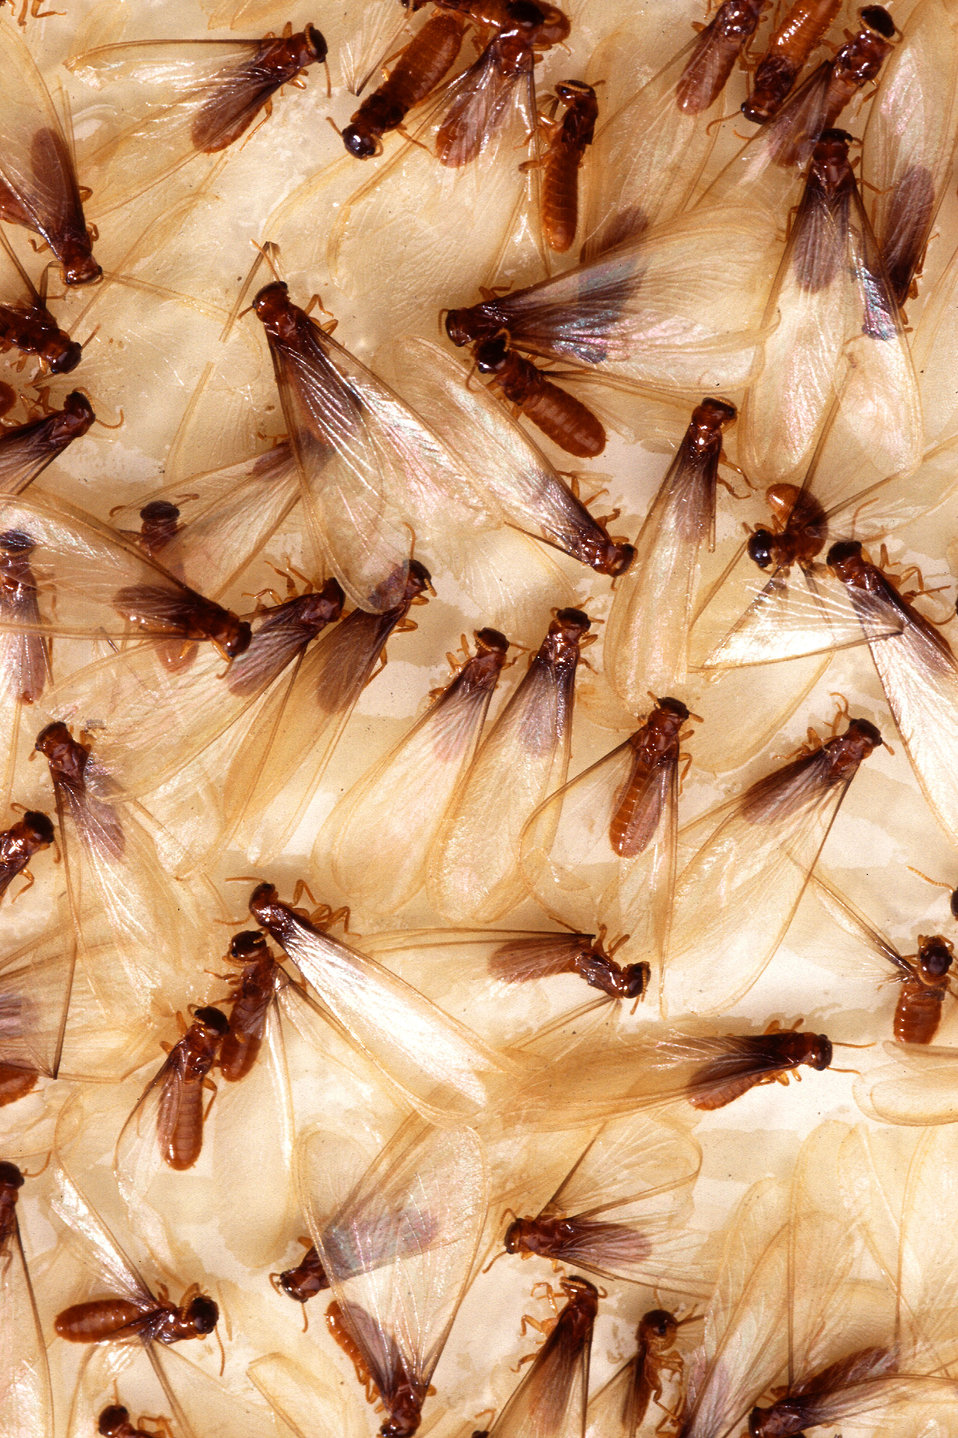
Formosan termite alates, also known as swarmers, have been captured on a sticky trap used to monitor populations.